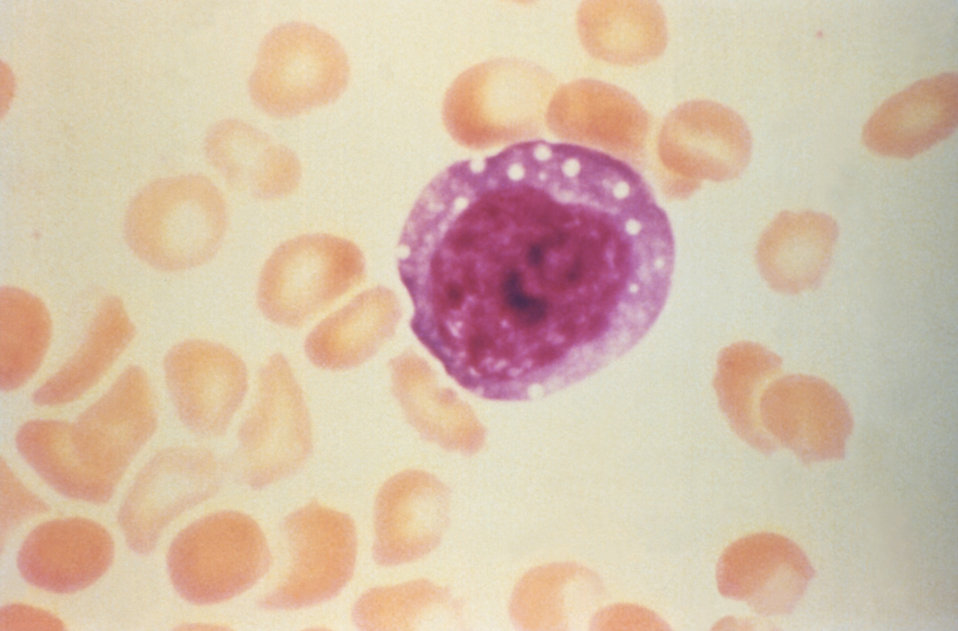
This micrograph depicts an atypical enlarged lymphocyte found in the blood smear from a HPS patient.